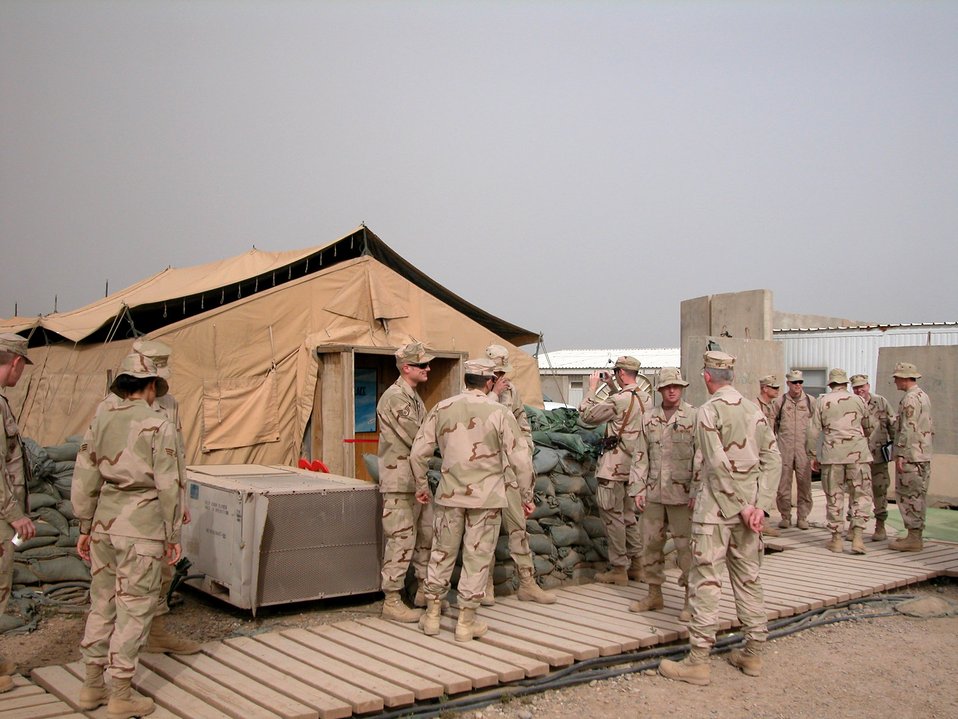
Balad chapel staff opens center in fallen pilot's honor

Airmen gather for the May 4 grand opening of Troy's Place, a Airmen's Ministry Center at Balad Air Base, Iraq. The center is named in honor of Maj. Troy Gilbert, an F-16 Fighting Falcon pilot from Luke Air Force Base, Ariz., deployed to Balad AB, who died supporting U.S. ground forces pinned down by Anti-Iraqi forces Nov. 27, 2006.